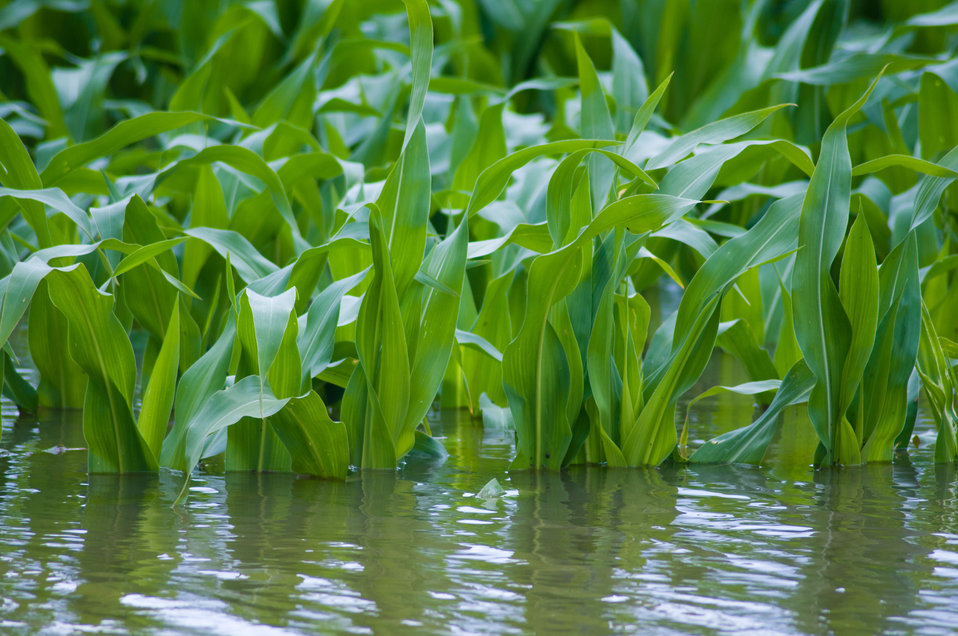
Mississippi River floodwaters have pushed into Yazoo River and into this cornfield near Yazoo City, MS, on Monday, May 16. 2011.